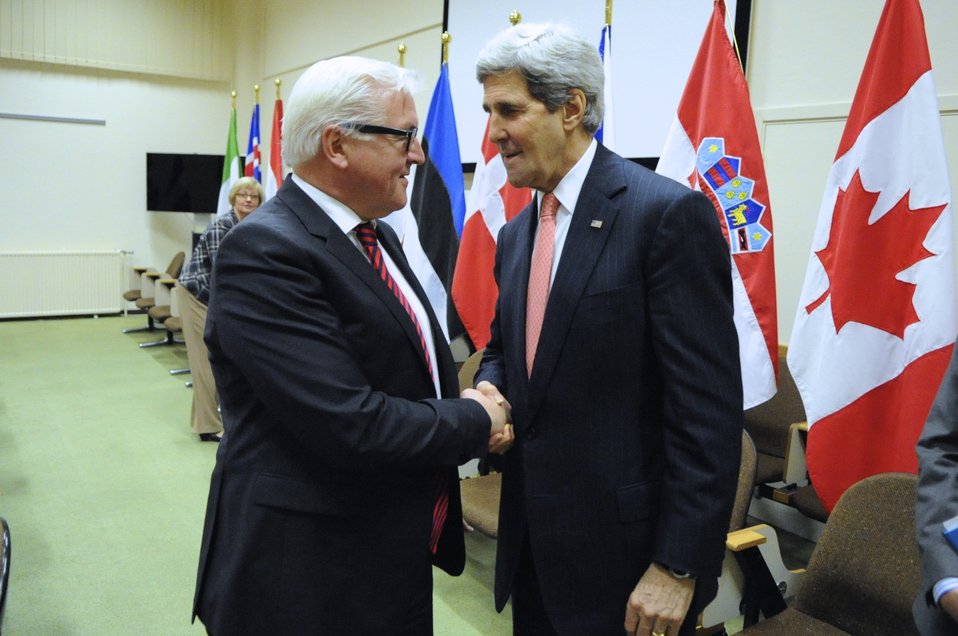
Secretary Kerry Meets With German Foreign Minister Steinmeier in Brussels

U.S. Secretary of State John Kerry shakes hands with German Foreign Minister Frank-Walter Steinmeier before a meeting on the sidelines of a NATO Ministerial Meeting in Brussels, Belgium, on April 2, 2014.